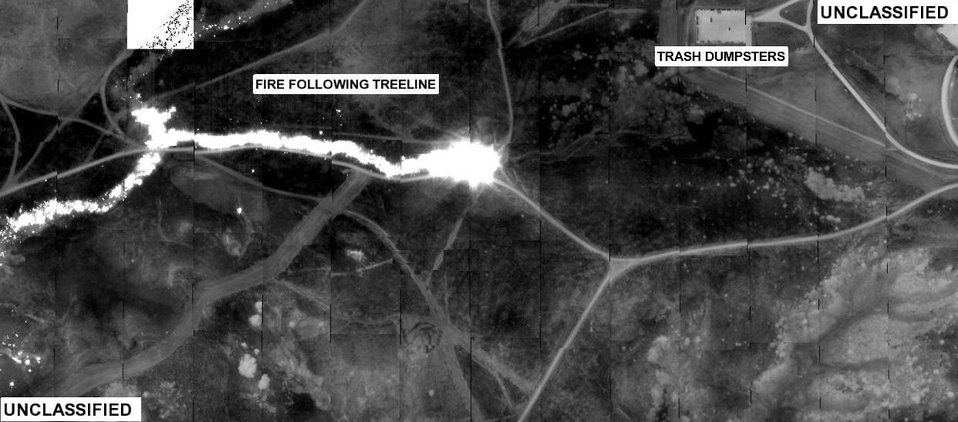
Global Hawk, U-2 capture essential wildfires images

An infrared image, taken by an RQ-4 Global Hawk Unmanned Aerial vehicle and analyzed for Southern California Firefighters, shows the Horno Fire progressing from left to right with hot areas and objects as white on a darker background.